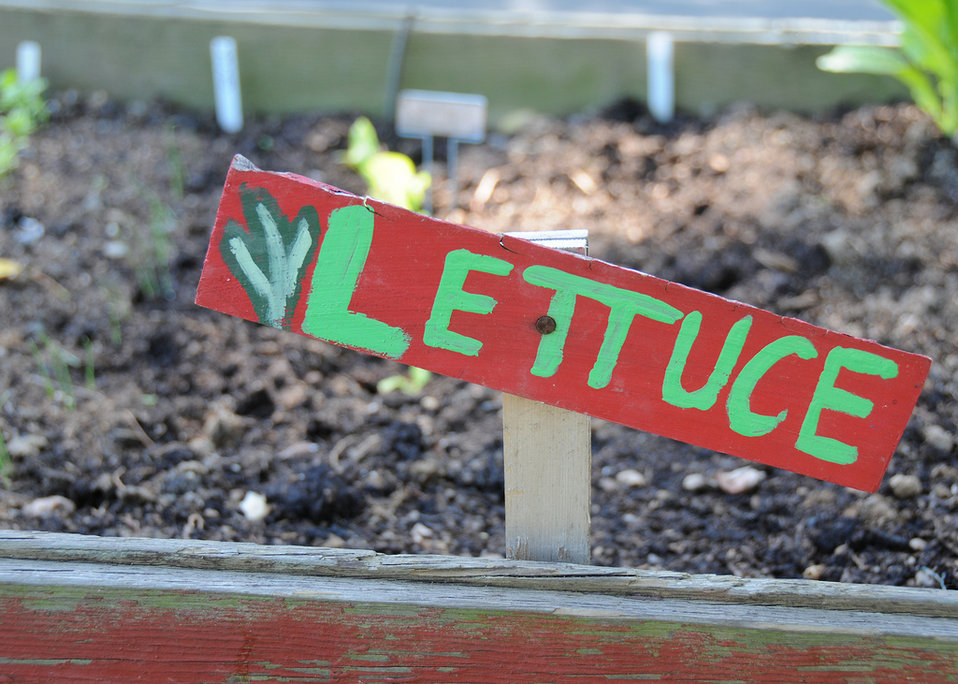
Gardening Blog Photo 2

At T.C. Williams High School students learn green gardening methods